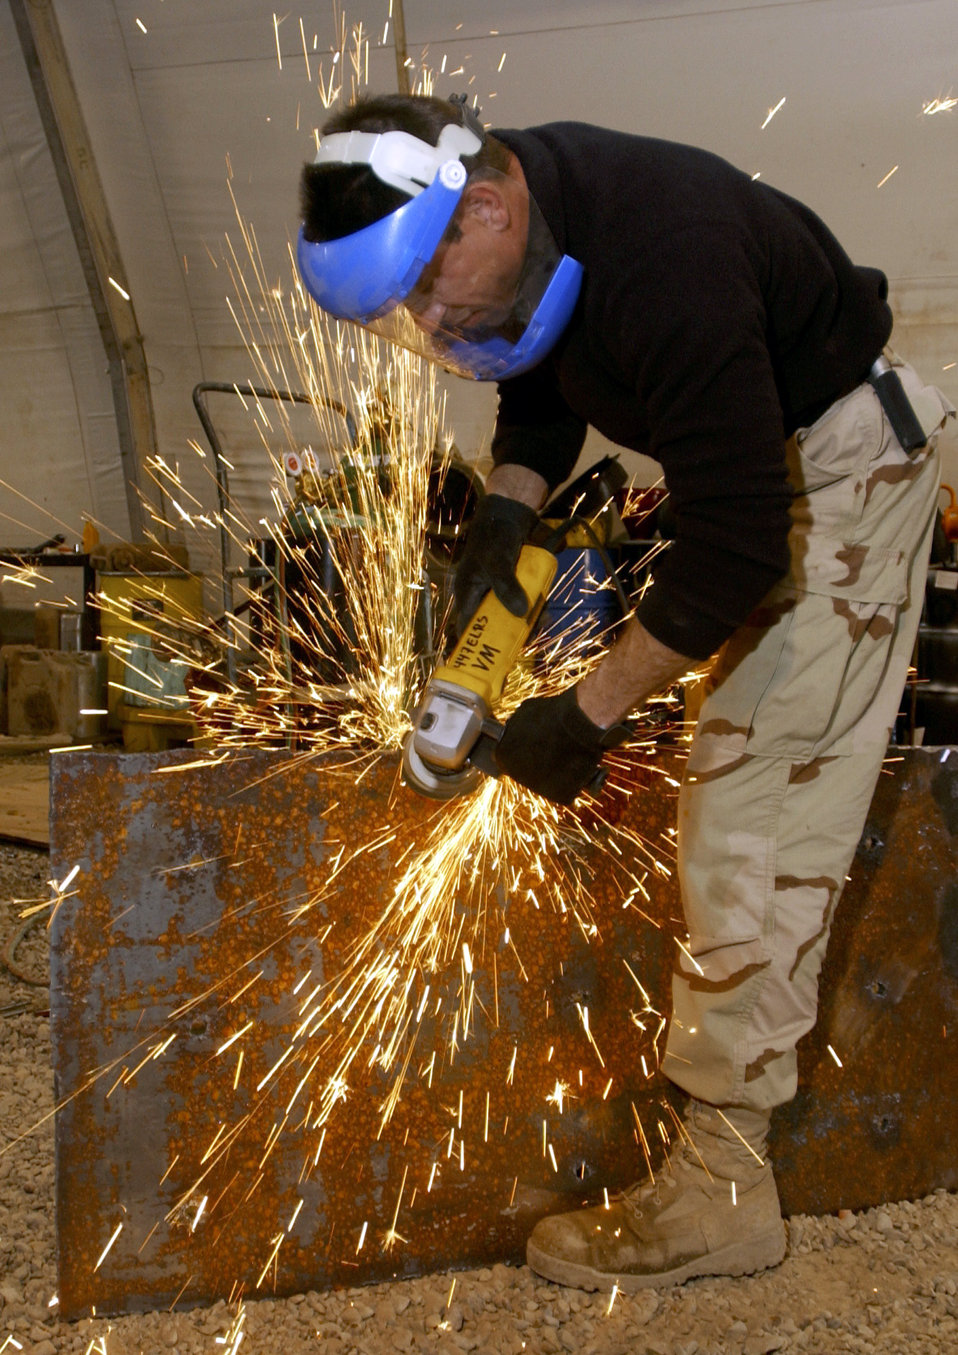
When sparks fly

BAGHDAD INTERNATIONAL AIRPORT, Iraq -- Tech. Sgt. Mark Sauerwald grinds a steel plate for armor protection on a 5-ton truck Jan. 16. Sergeant Sauerwald is a vehicle mechanic with the 447th Expeditionary Logistical Readiness Squadron here.